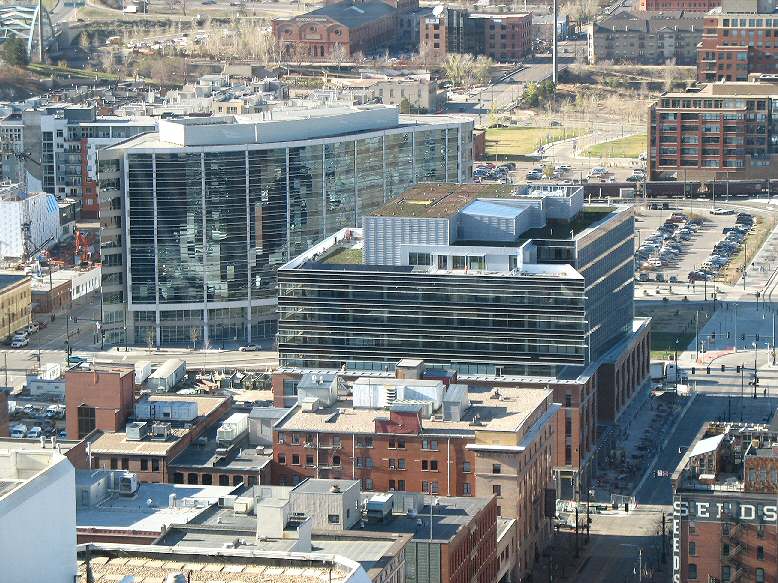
Overhead View of Region 8 Green Roof

Green roofs intercept the solar radiation that would strike dark roof surfaces and be converted into heat, thereby improving energy conservation.